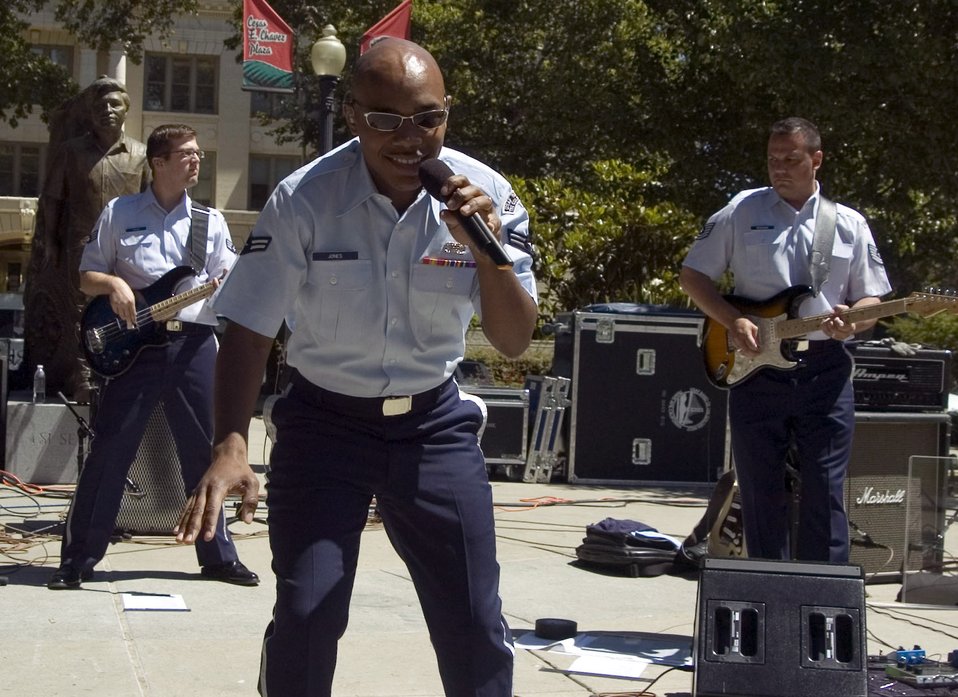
Band of the Golden West rocks downtown Sacramento

(From left to right) Senior Airman Jason Hafer Airman, 1st Class Andrew Jones and Tech. Sgt. Gary Rosenak of the Air Force Band of the Golden West from Travis Air Force Base, Calif., perform in the Cesar Chavez Plaza as part of Air Force Week June 7 in Sacramento, Calif.